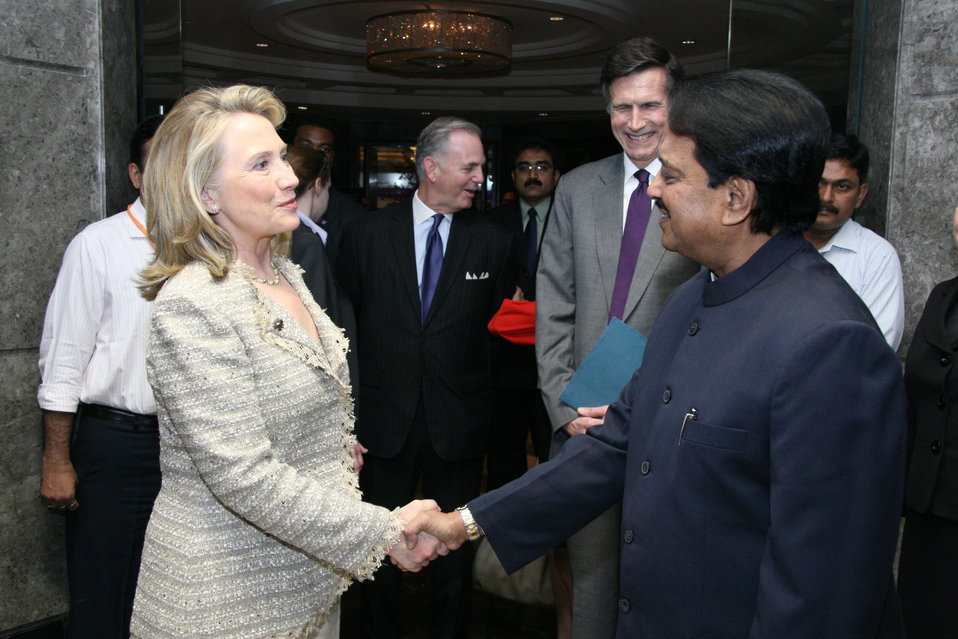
Secretary Clinton Shakes Hands With Indian Minister Deshmukh

U.S. Secretary of State Hillary Rodham Clinton shakes hands with Indian Minister of Science and Technology Vilasrao Deshmukh during the 'U.S.-India Partnering for Innovative Solutions' event in New Delhi, India, on May 8, 2012.